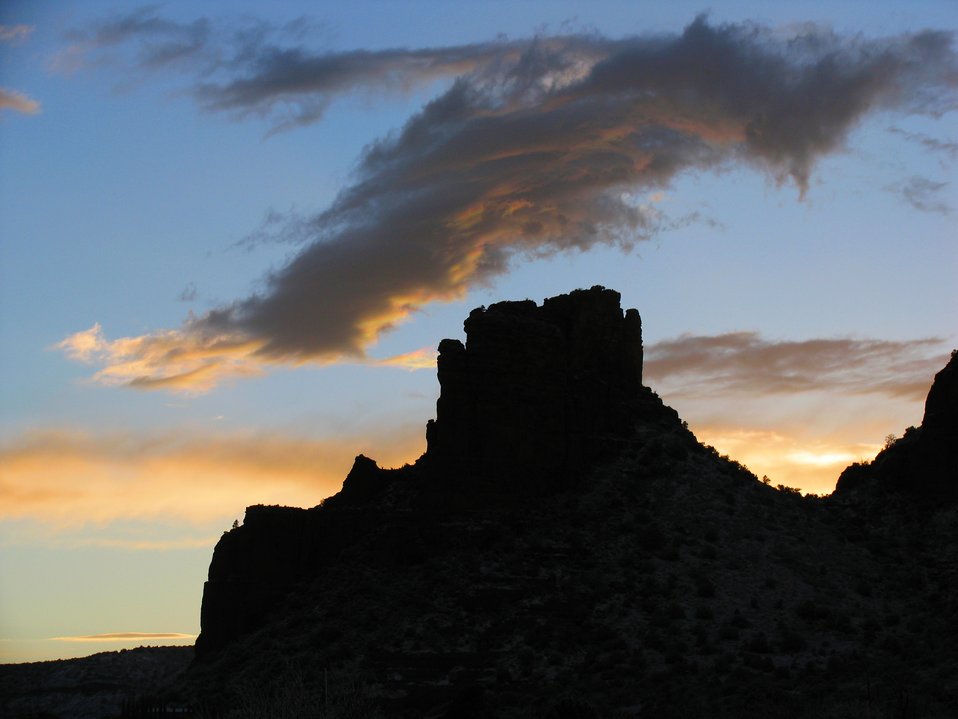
A castle-like rock structure silhouetted in the sunset